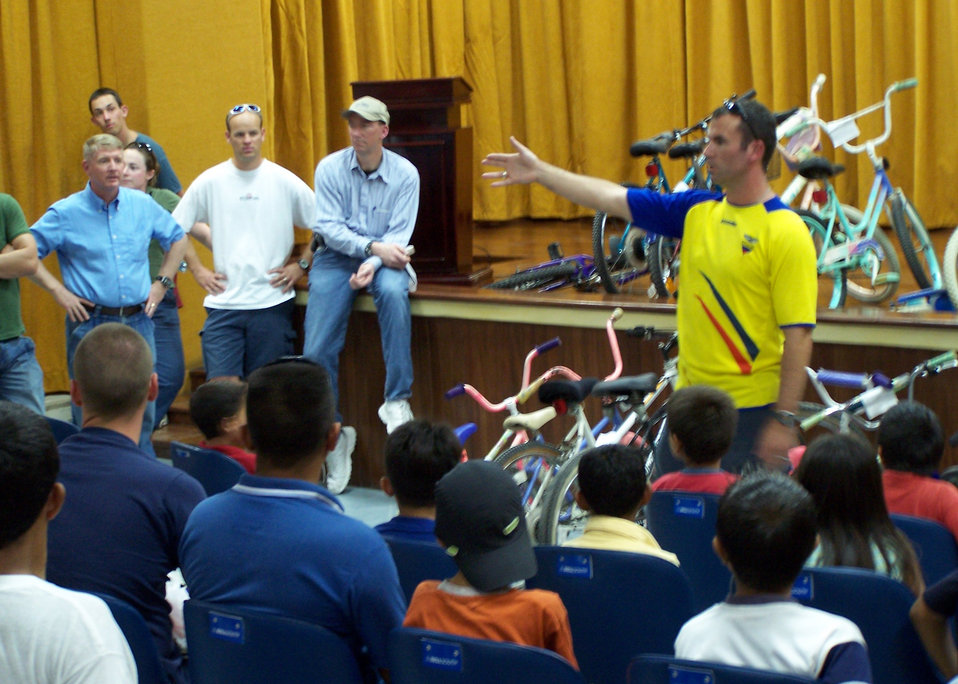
Bicycles for Kids

Maj. Chris Buckley, 478th Expeditionary Operations Squadron and lead volunteer for the English class at the Albergue School in Manta, Ecuador, tells the students the process for retrieving their donated bicycles.